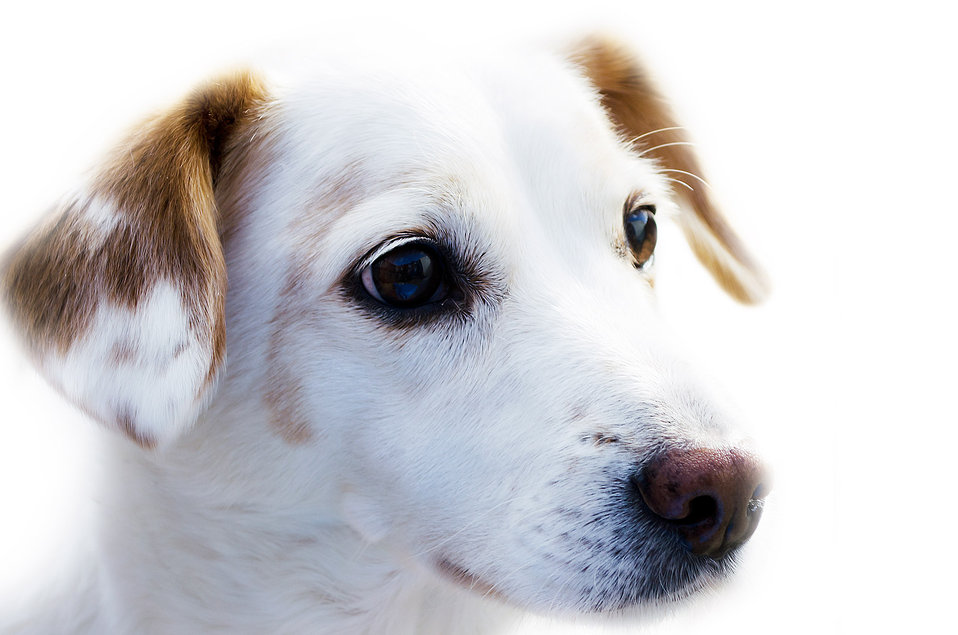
Dog - background.